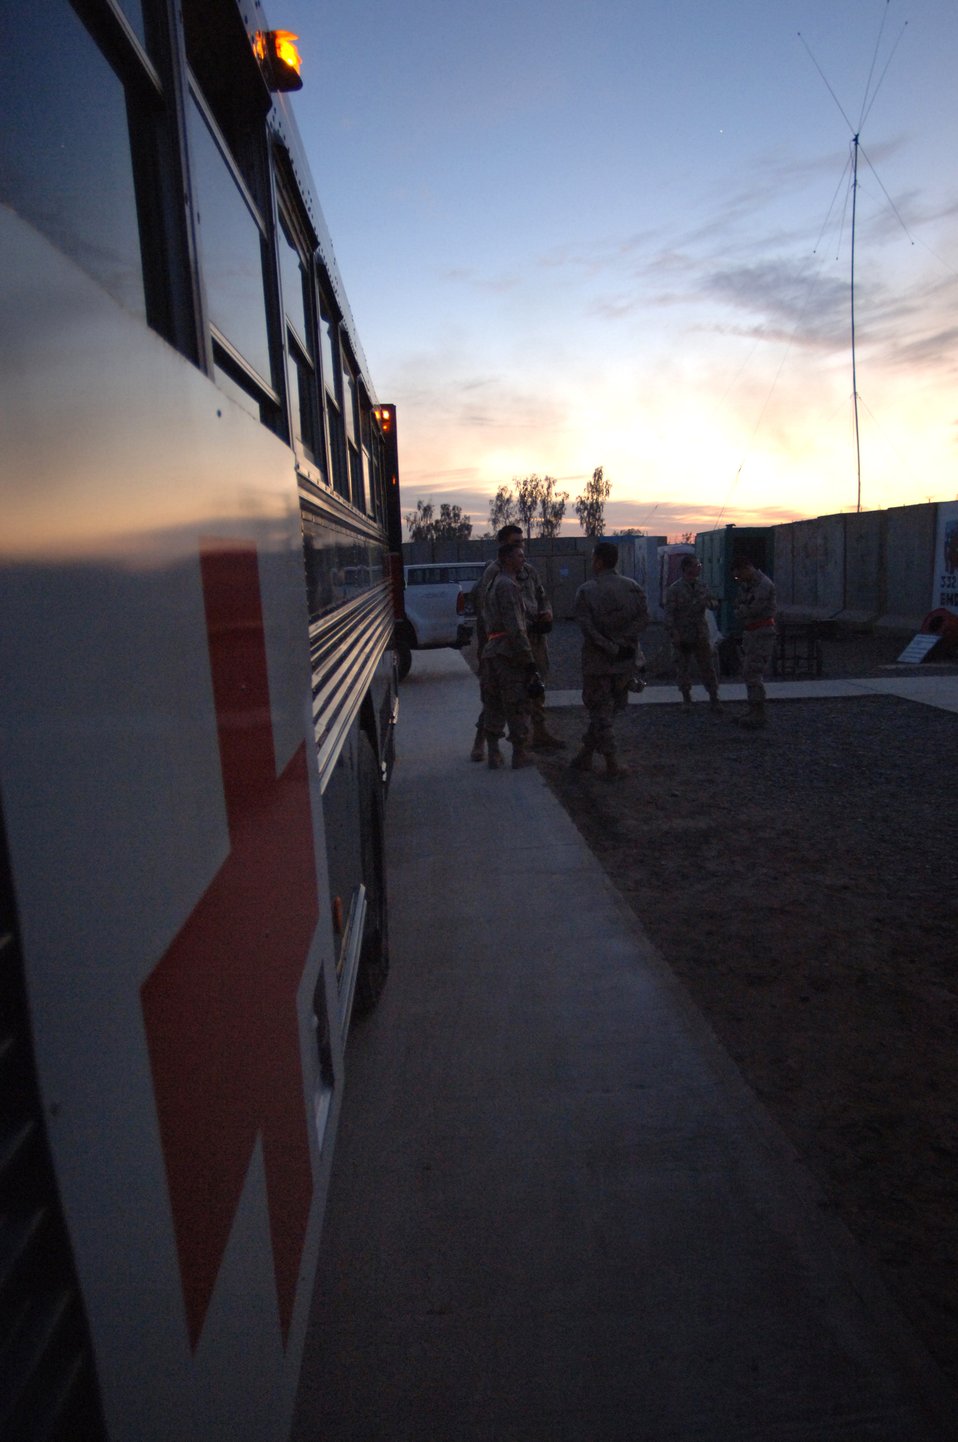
Staging facility prepares injured warfighters for flight

Contingency Aeromedical Staging Facility volunteers wait next to a medical transport bus for the sign to help load injured Sailors and Soldiers onto the bus that will take them to their flight Feb. 21 to Landstuhl, Germany, where they will receive further care for their wounds. The Contingency Aeromedical Staging Facility is a staging where patients are prepared for their flight out of Iraq.